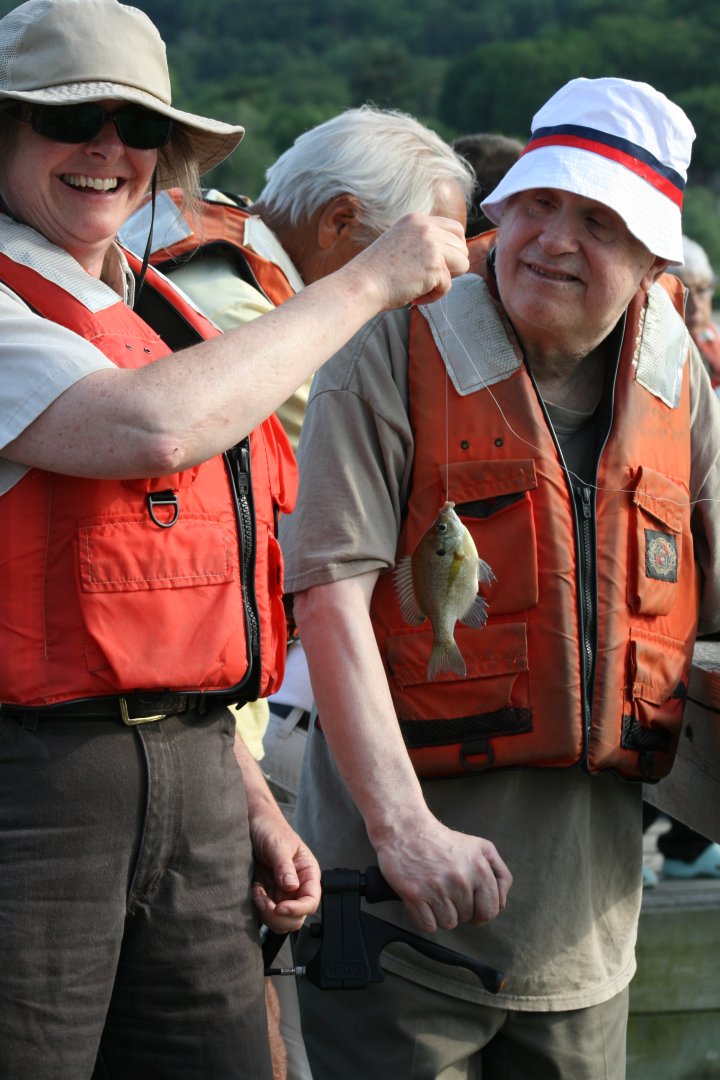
WB Reid assists a Project Compass client

Wildlife Biologist Lisa Reid poses with a Project COMPASS client and his catch.